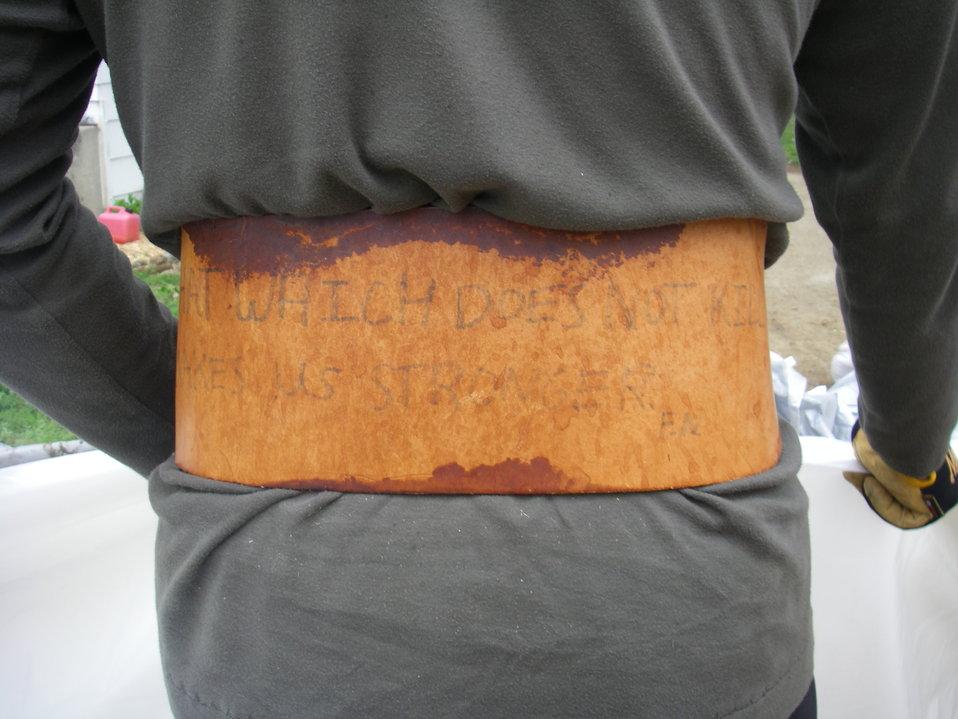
That Which Does Not Kill Us Makes Us Stronger

As the Missouri river continues to rise, the U.S. Fish and Wildlife Service and other partners volunteer to fill sand bags and take other preemptive measures to protect lives and property below Garrison Dam in the Bismarck/Mandan area in North Dakota. With planned releases from the dam expected to nearly double the river’s flow in the next two weeks, more flooding is expected.